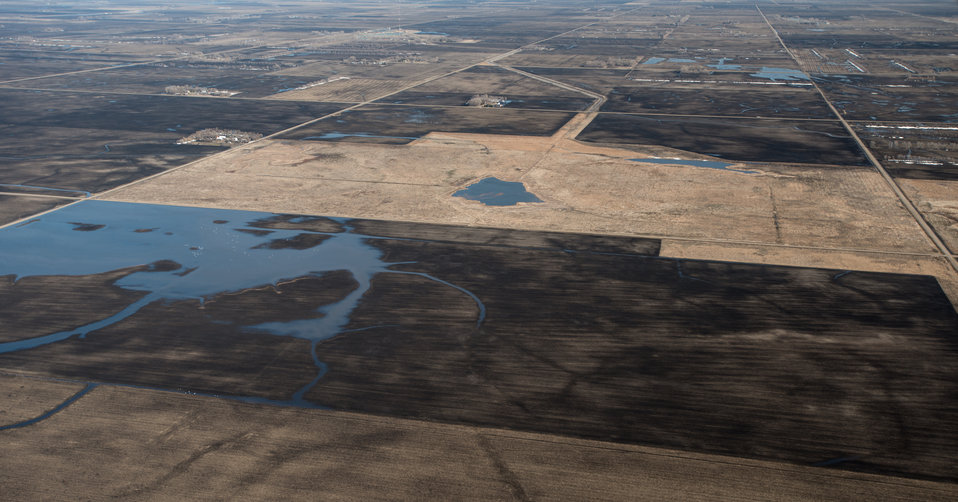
Vertin, U.S. Department of Agriculture (USDA) Natural Resources Conservation Service (NRCS) Wetland Reserve Program (WRP) in Wilkin County, MN, on Tuesday, April 30, 2013. For information about this and other programs from the USDA Red River Basin Initiative (RRBI) please see www.mn.nrcs.usda.gov/news/features13/RRBI.html.